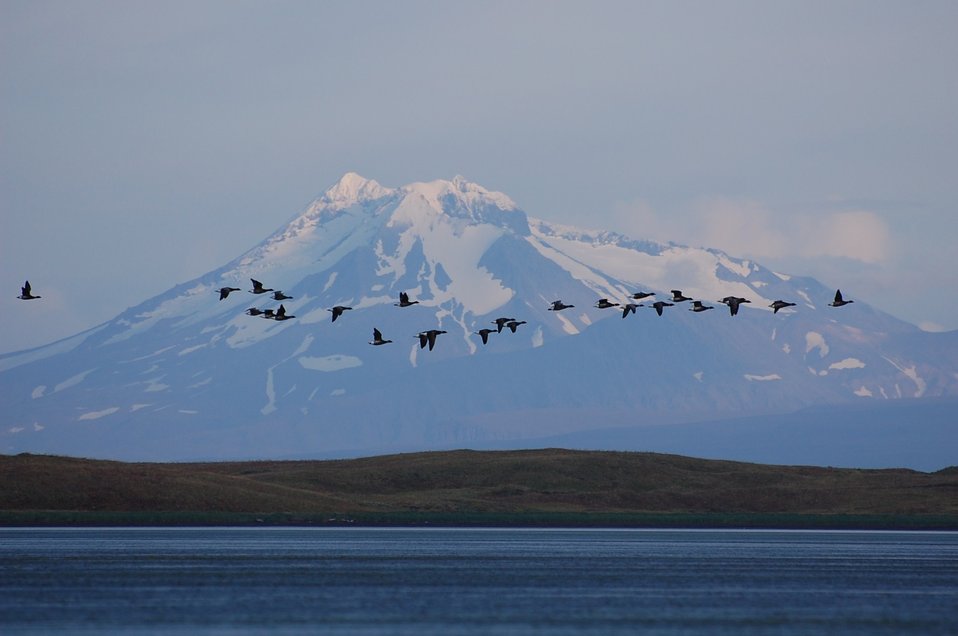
Brant at sunset

Brant fly in front of Mount
Dutton, Izembek National Wildlife Refuge
Photo by Kristine Sowl, USFWS, Public domain